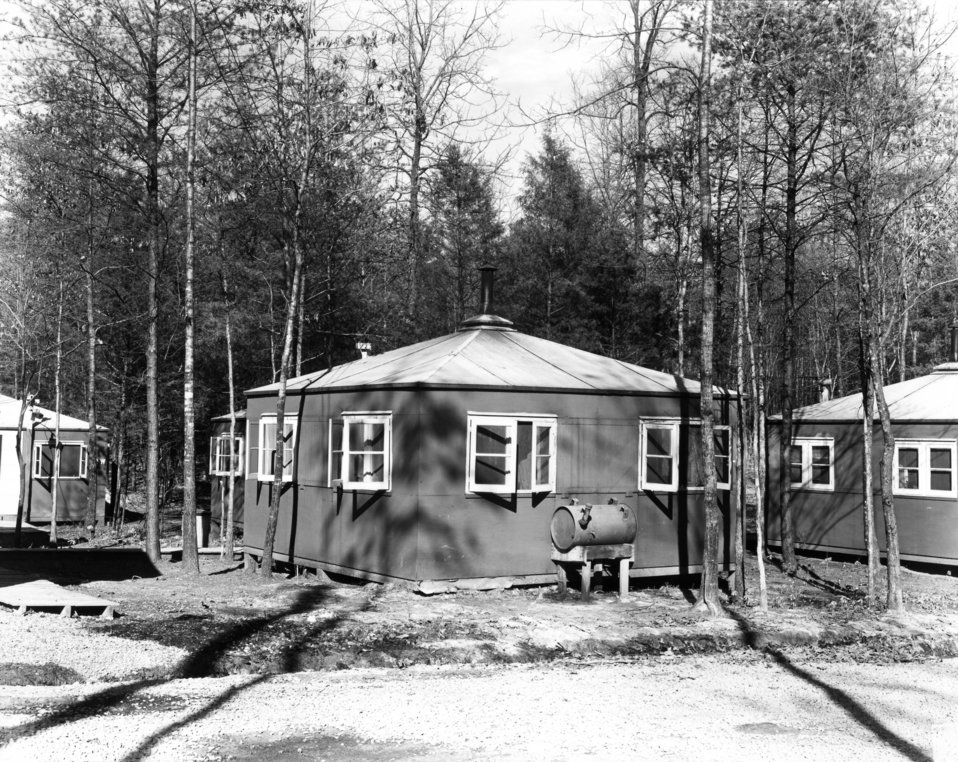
Housing at Oak Ridge